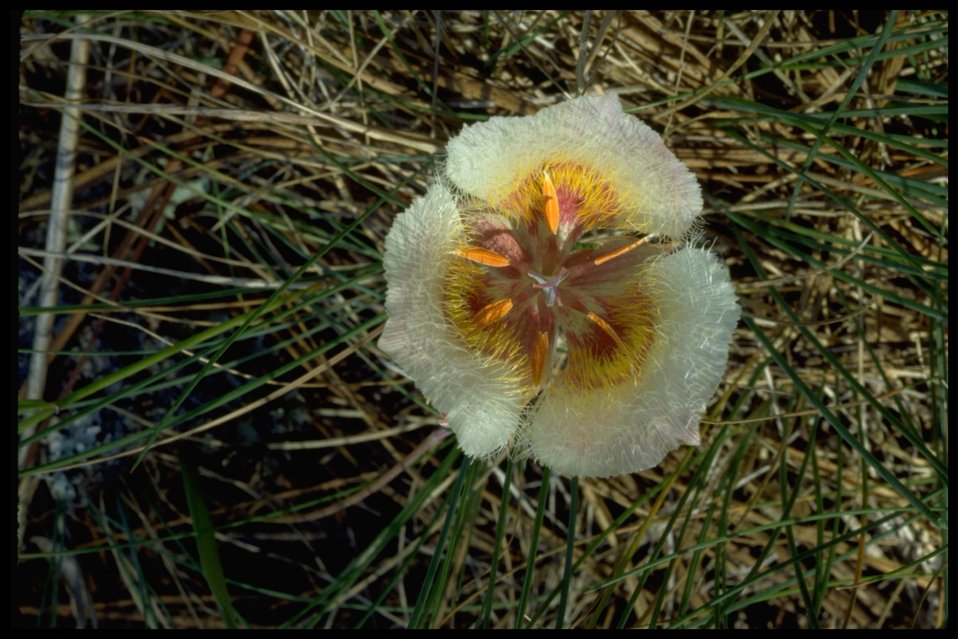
Medium shot of crinite mariposa lily (Calochortus coxii).